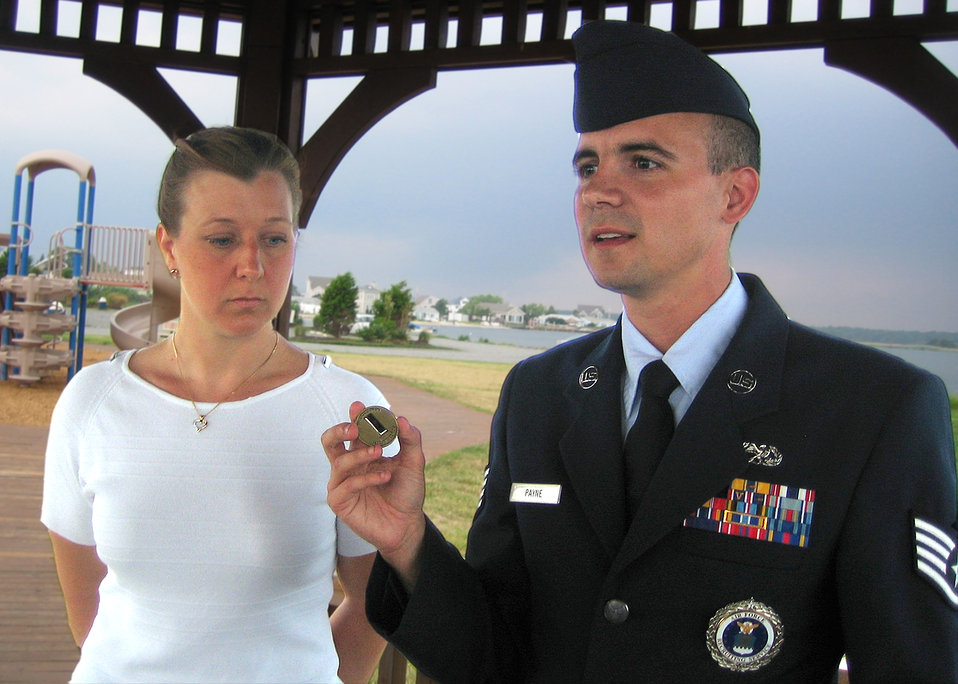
Recruiter receives 2007 Pitsenbarger Award for heroic, selfless act

Air Force recruiter Staff Sgt. Robert Payne prepares to coin newly minted 1st Lt. Susan M. Senko, an officer accessions nurse candidate, recently at Forked River, N.J. The Air Force Sergeants Association named the Bala Cynwyd, Pa., recruiter as its 2007 Pitsenbarger Award recipient. The award recognizes Air Force enlisted members who perform heroic acts that result in saving a life or preventing serious injury.